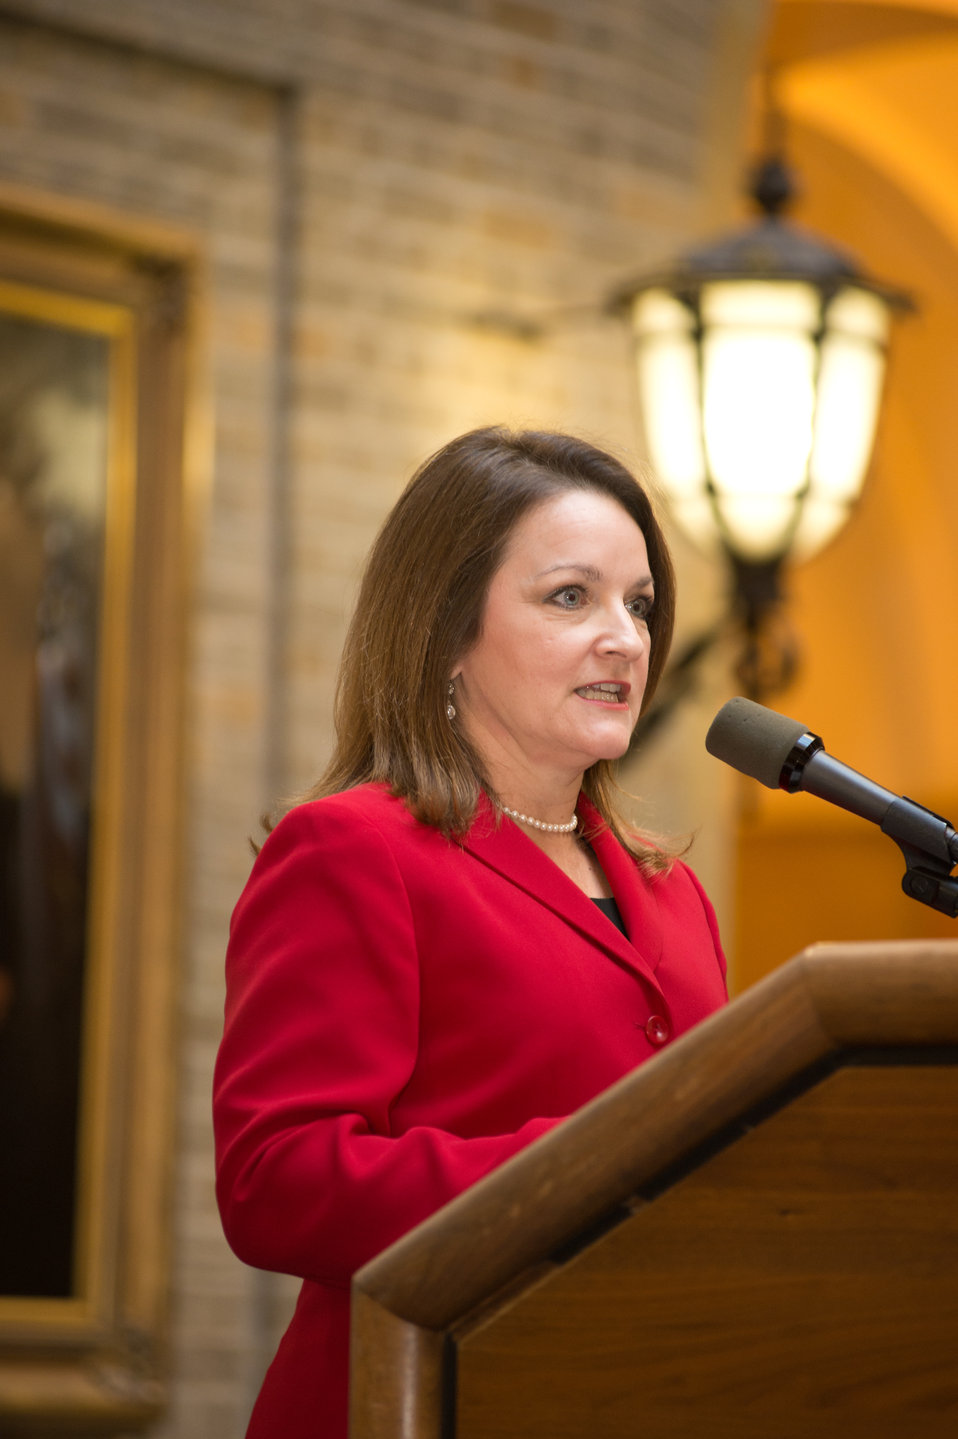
Paige Hinkle-Bowles, Deputy Assistant Secretary of Defense for Civilian Personnel Policy addresses employees and partner agencies at the United States Department of Agriculture Feds Feed Families closing ceremony, on Wed., Nov. 13, 2013 in Washington, D.C. Hinkle-Bowles is in charge of policy and oversight of civilian personnel plans, policy and programs for defense employees worldwide. Federal employees nationwide stepped up the challenge of Feds Feed Families and gathered 9 million pounds of food for food banks across the nation and the National Capital Region for families in need setting an all time record high.